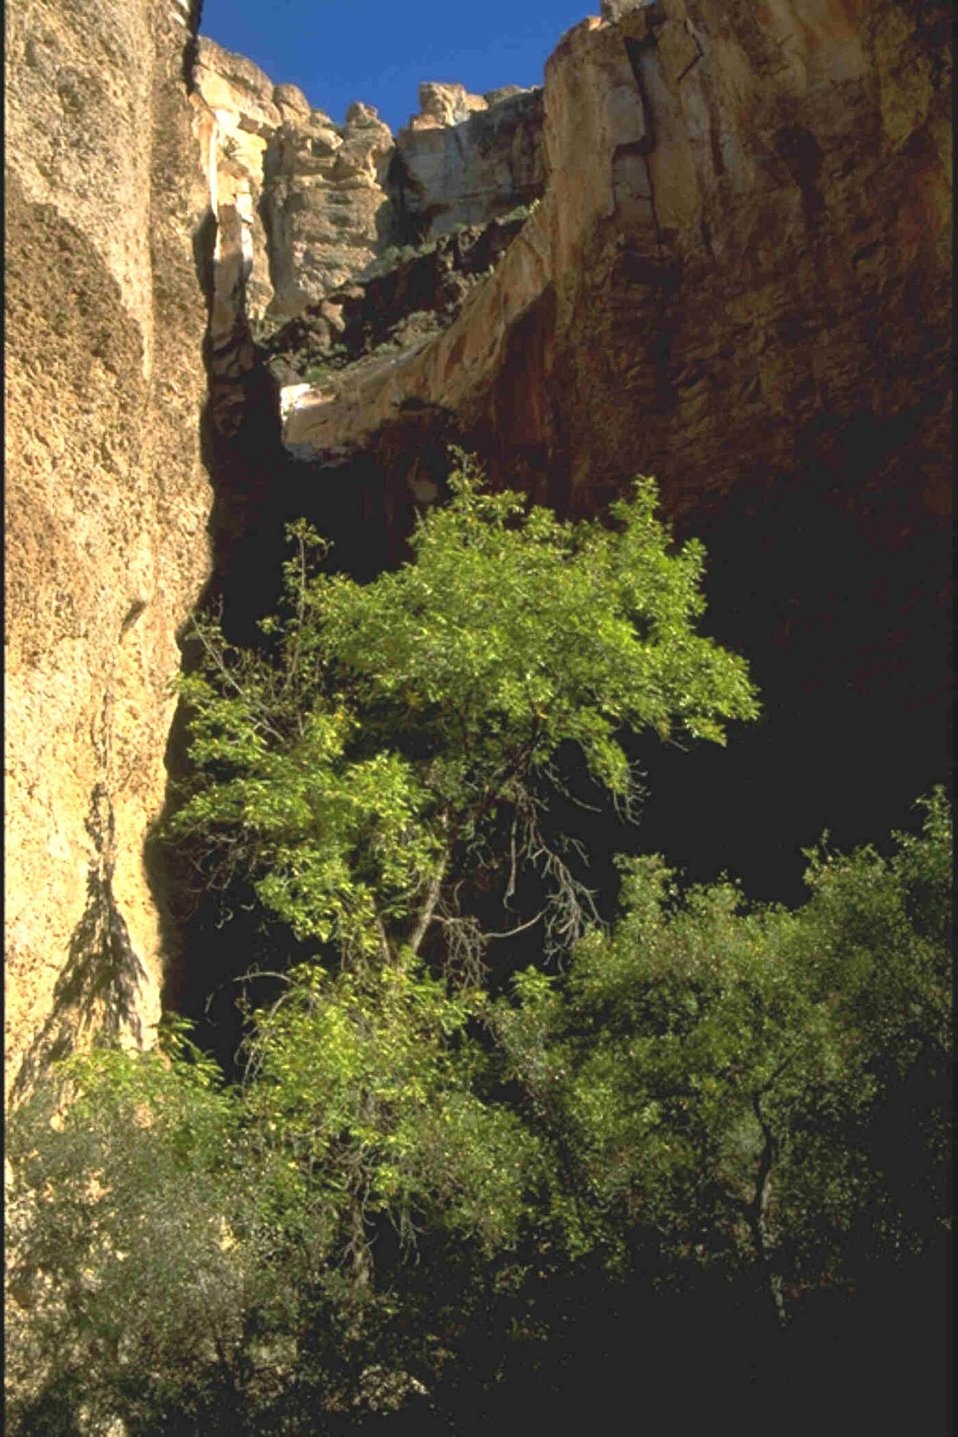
A tier of ledges in a grotto near Booger Canyon.